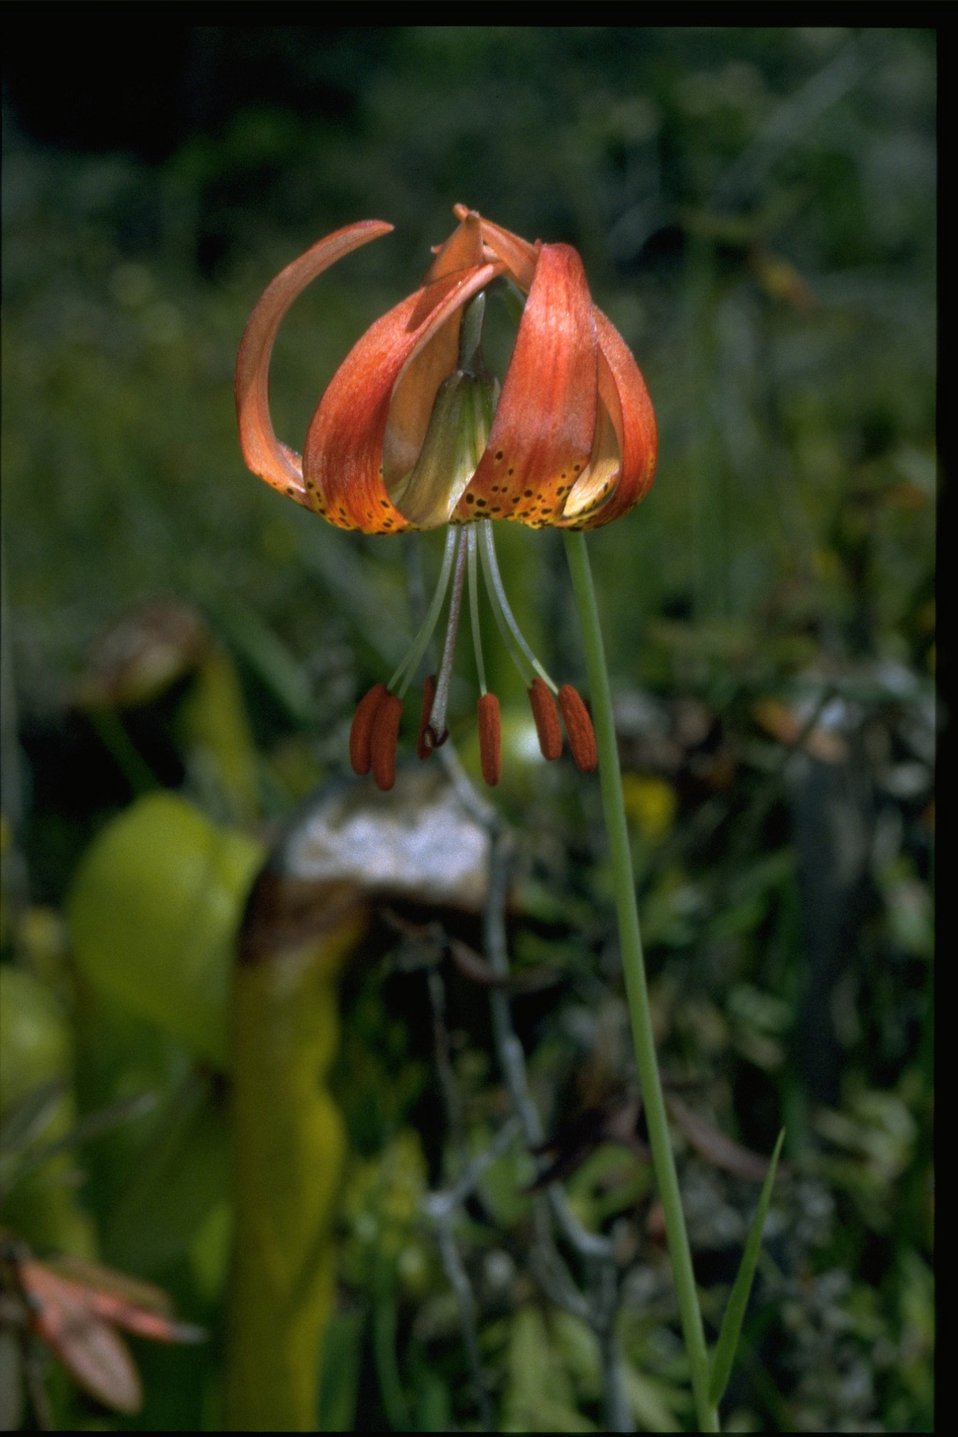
Closeup shot of Lilium pardalinum var vollmeri.